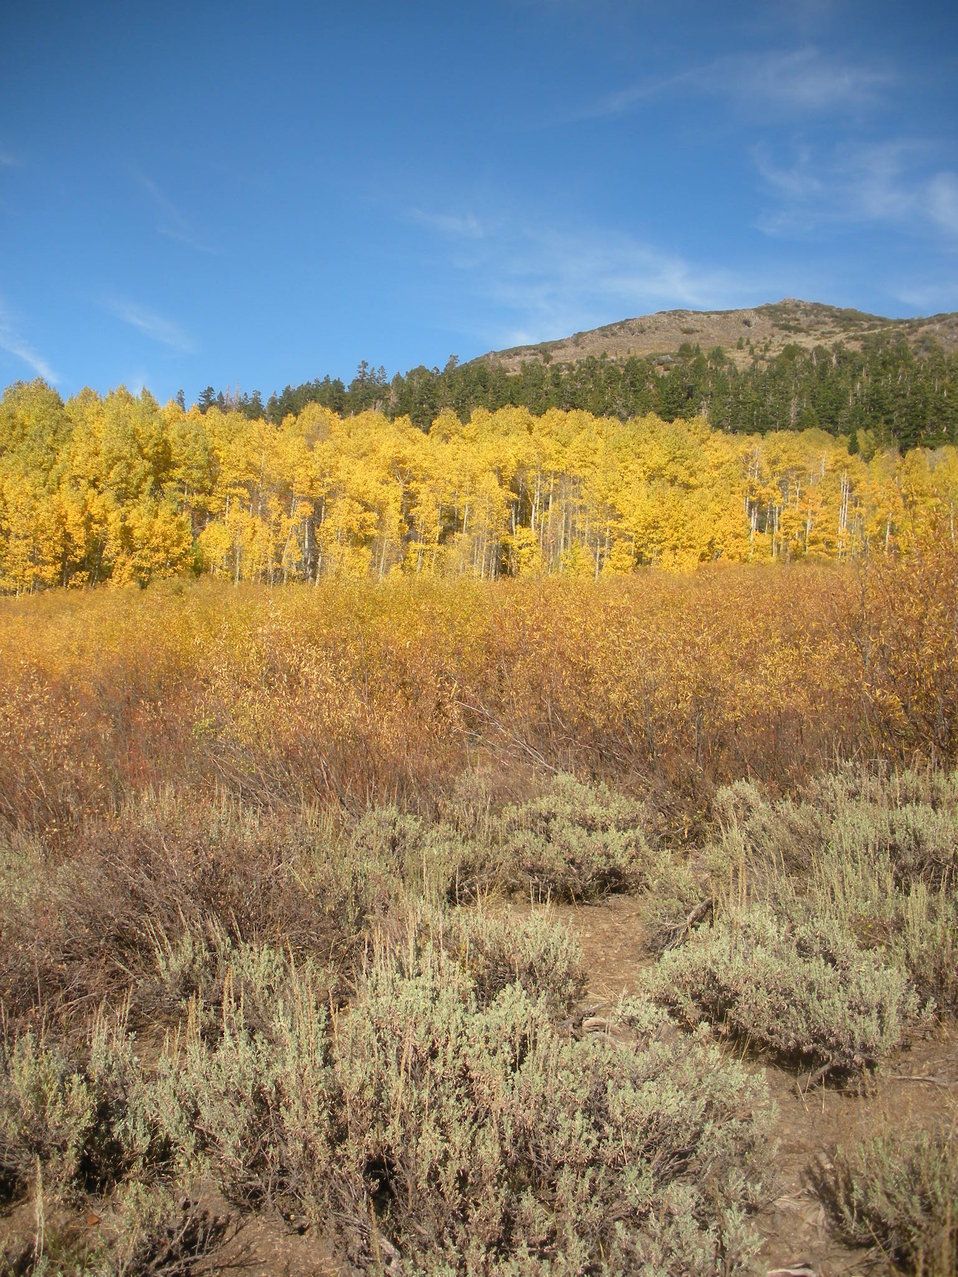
The golden hues are seen in Horsethief Canyon, part of the Carson Ranger District on the Humboldt-Toiyabe National Forest in California.